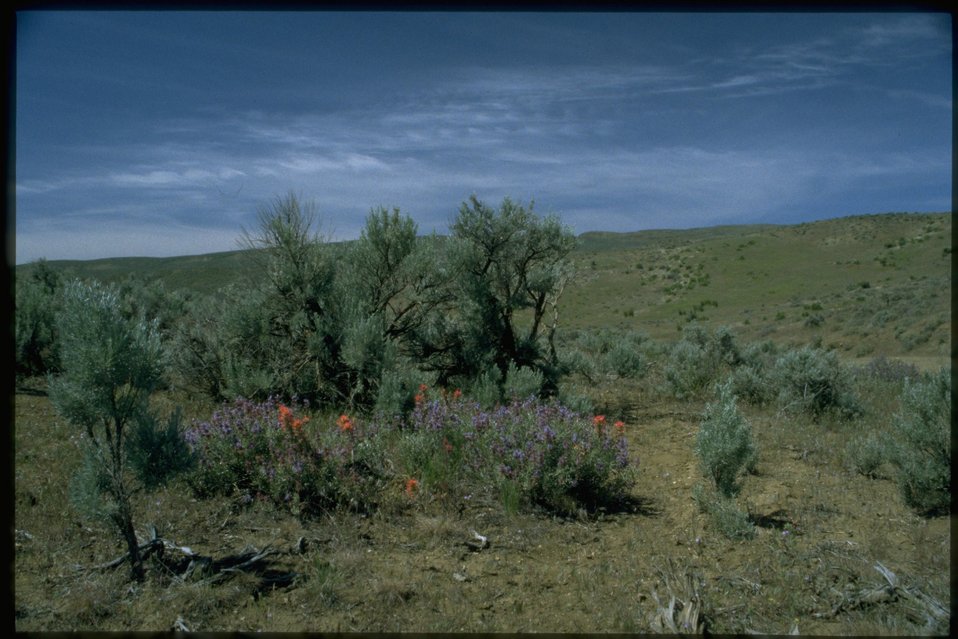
Scenic view.